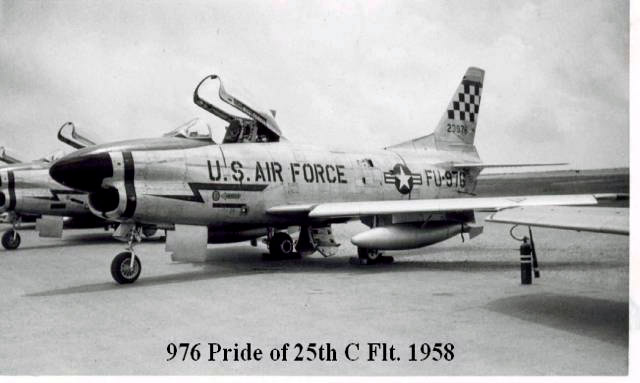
F-86 Sabre in Korea

An F-86 Sabre from the 25th Fighter Inceptor Squadron sits on the flight line at Suwon Air Base, South Korea in 1958. The aircraft displays the